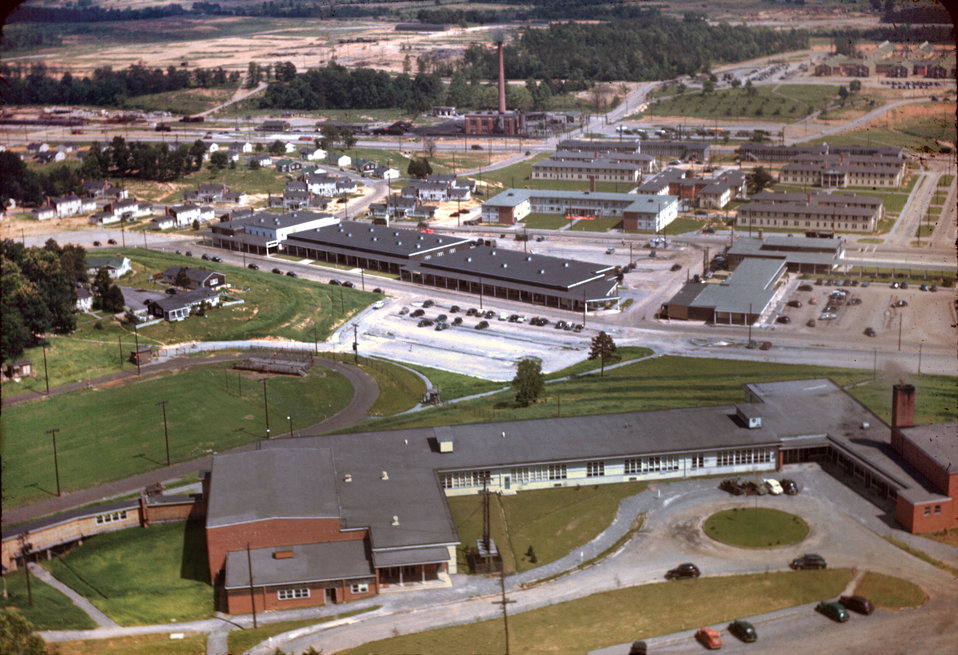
Oak Ridge High School

DOE photo by Ed Wescott
Oak Ridge Tennessee